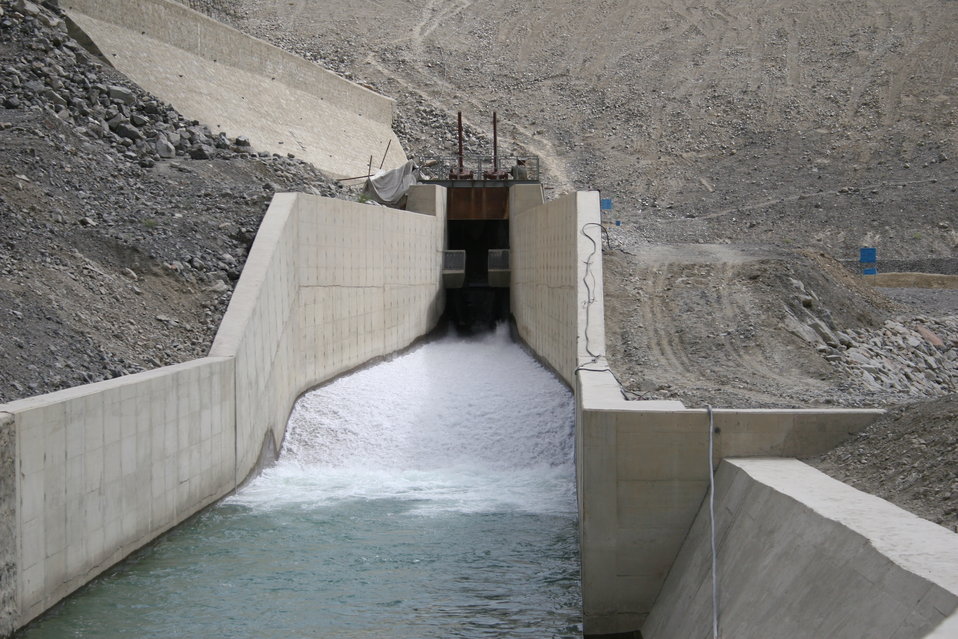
Satpara